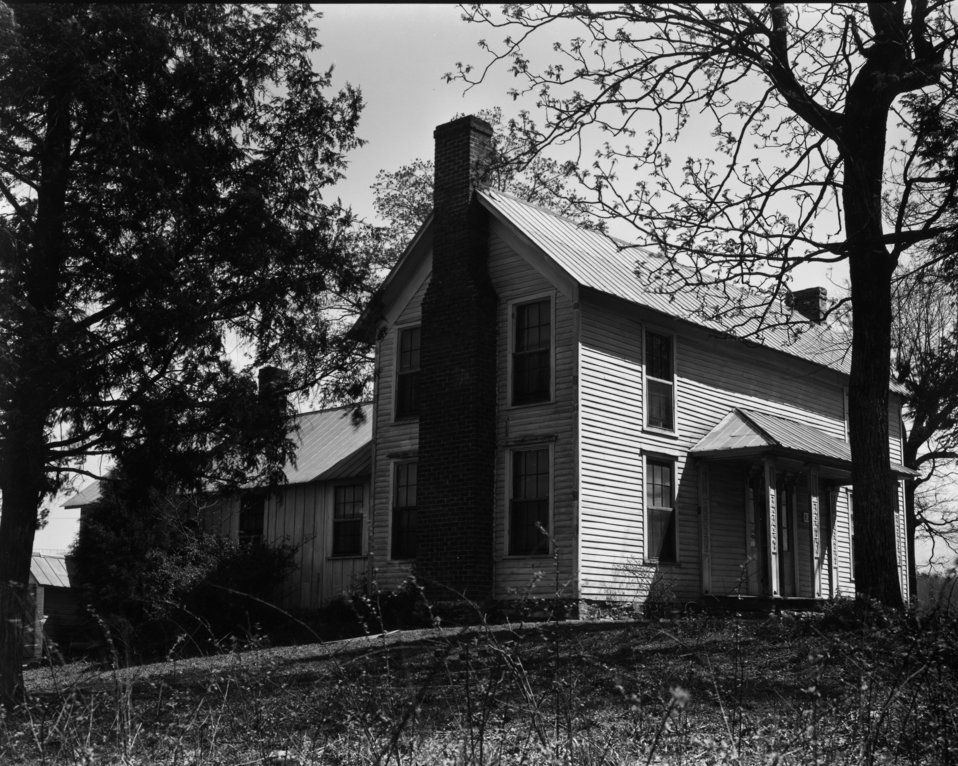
Early settlers at Oak Ridge